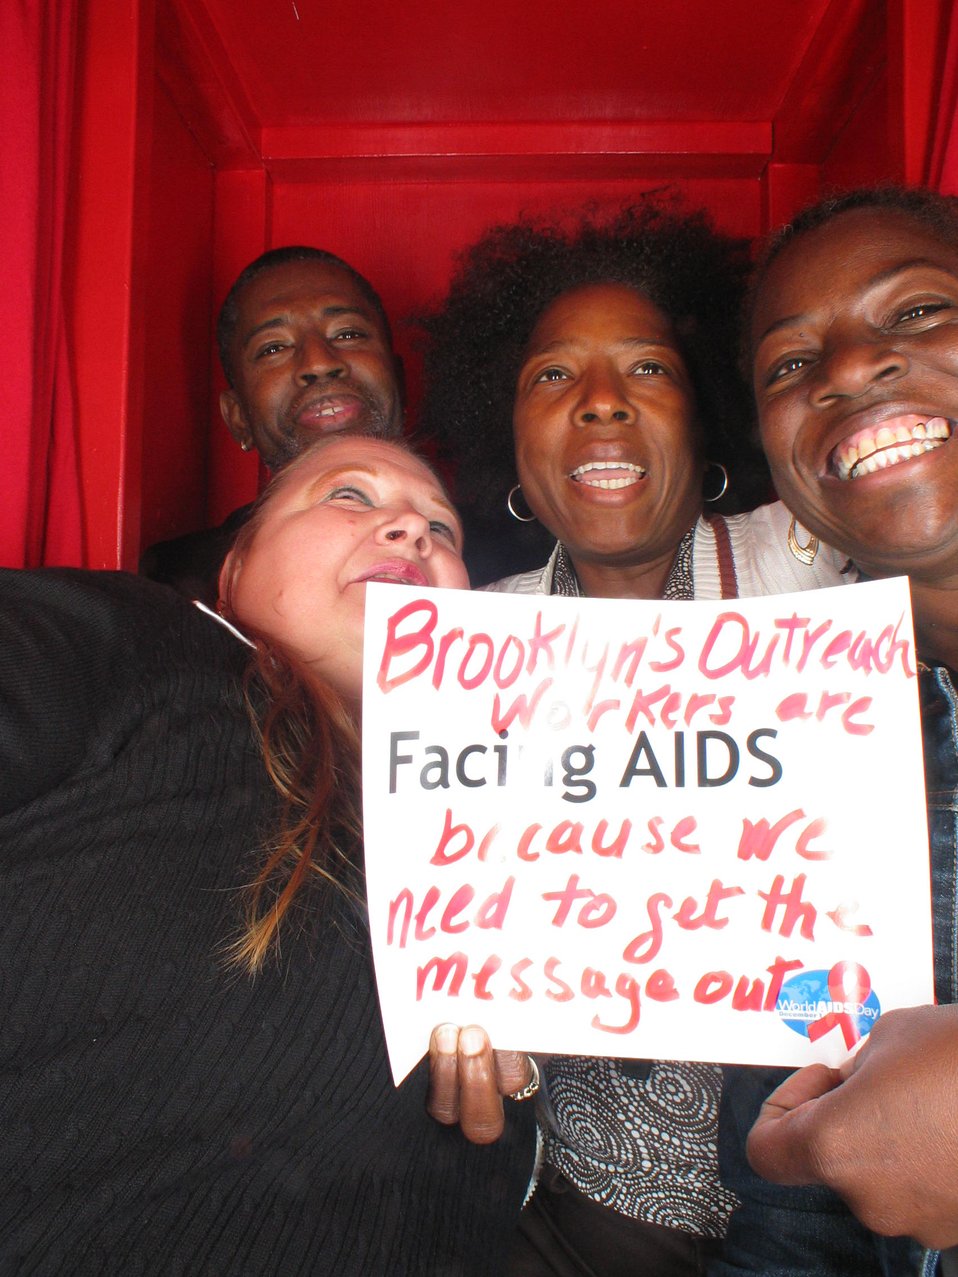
Brooklyn's outreach workers are Facing AIDS because we need to get the message out.